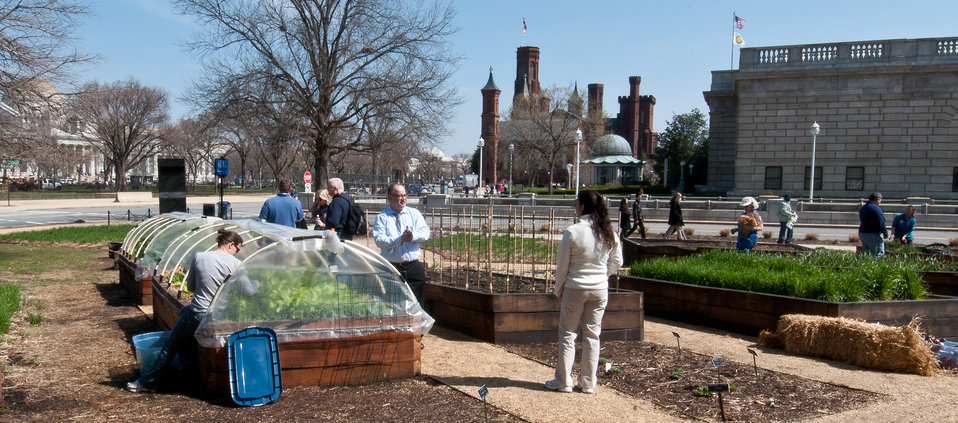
The People's Garden at the U.S. Department of Agriculture (USDA), in Washington D.C., on Thursday, March 17, 2011. Volunteers in several times a week, to weed, mulch, plant, water and what ever it takes to grow a wide variety of produce. Although a few are ornamental, most are destined for charity kitchens. Located on the corner of Jefferson Drive, SW and 12th St. SW, people often stop to ask questions about the garden. Part of the volunteers’ training is to be a spokesperson for the People's Garden Initiative, an effort by the USDA that challenges its employees to establish People's Gardens at USDA facilities worldwide or help communities create gardens. People's Gardens vary in size and type, but all have a common purpose - to help the community and the environment.